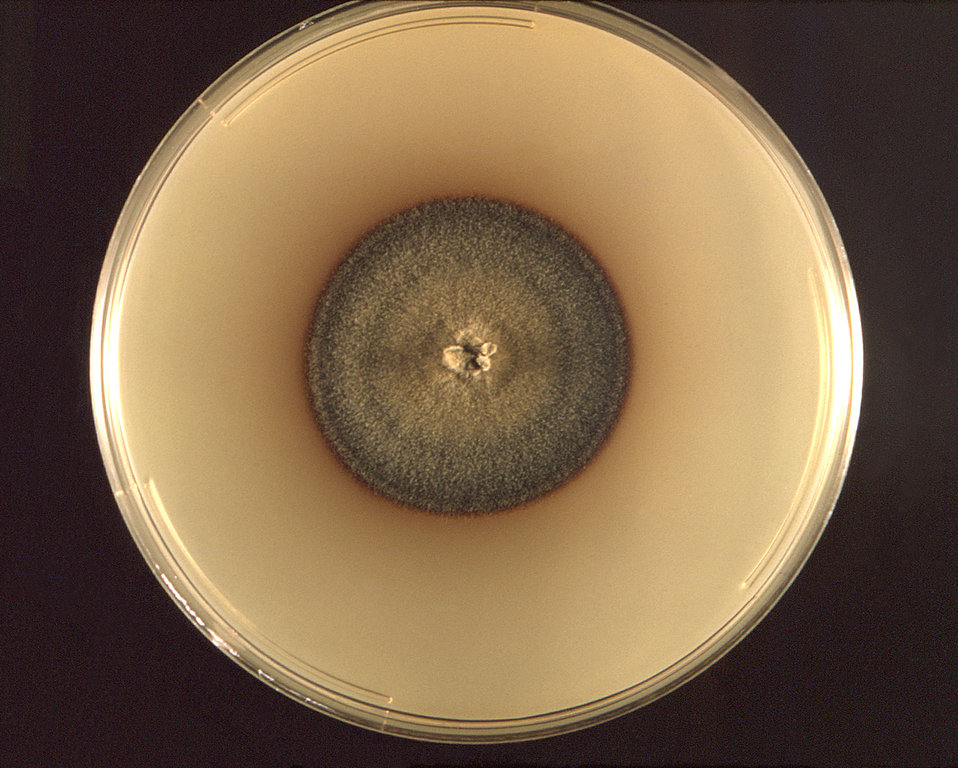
Photographed from the front, this image depicted a Petri dish containing a single Ochroconis gallopavum fungal colony, formerly known as Dactylaria gallopavum. Being a dematiaceous, or pigmented fungus, you'll note that the coloration of this colony ranges from dark brown, to lighter shades of brown, and radiates in a ringed pattern from a raised center. The colonial texture is velvety in appearance. See PHIL 11082 for the reverse view of this colony.